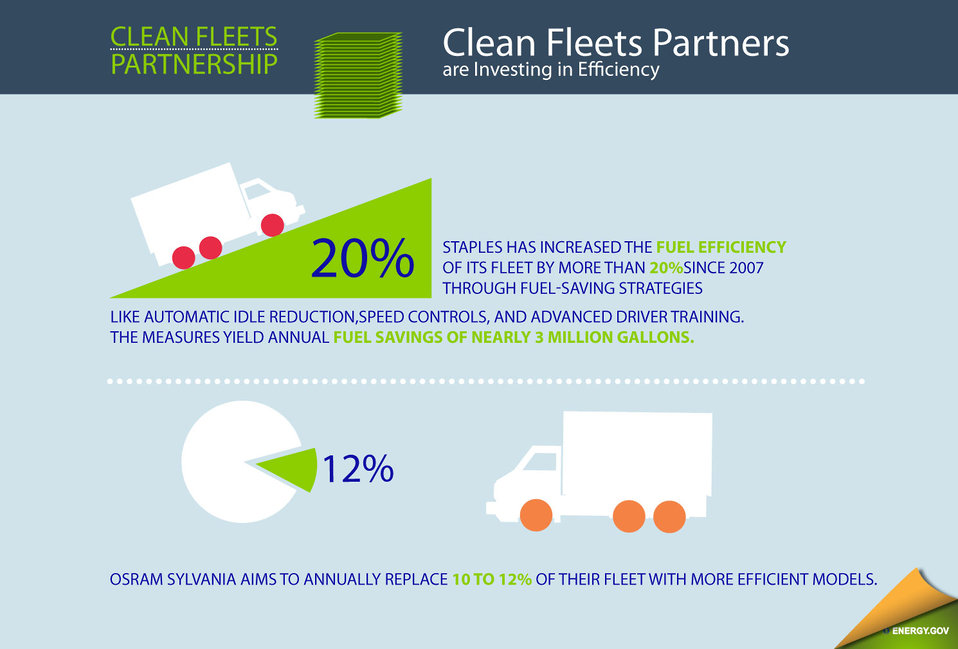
Investing in Efficiency